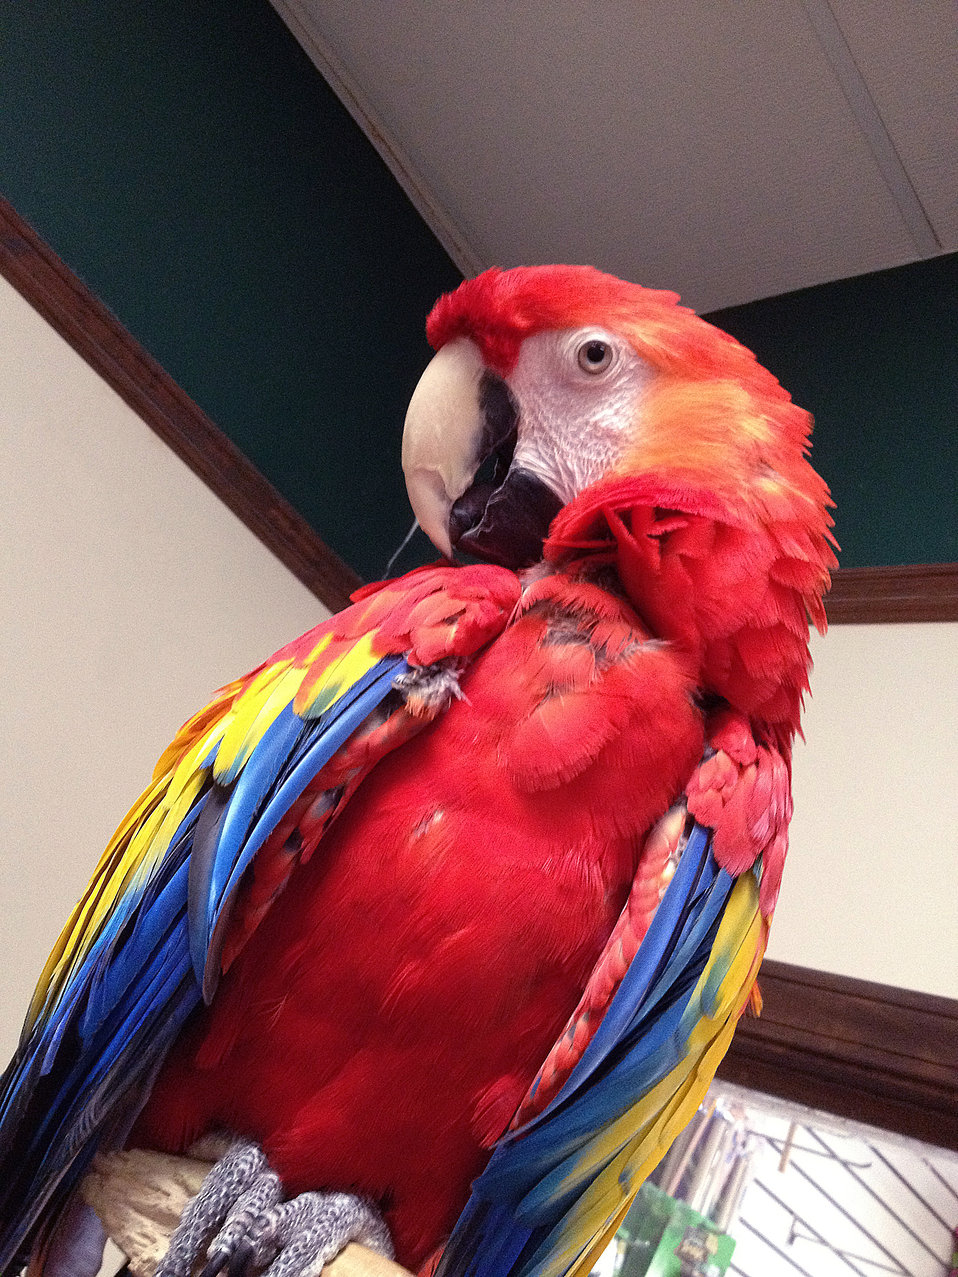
This image depicts a beautifully-colored adult parrot known as a Scarlet Macaw, or Aracanga, Ara macao, which can be found in its native habitat of the tropics of the Americas.